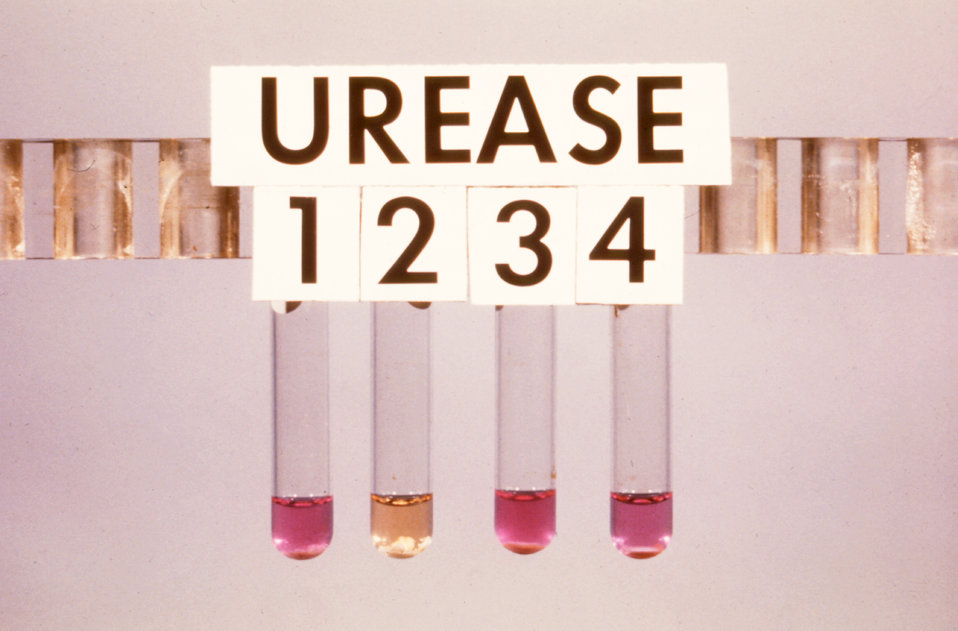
This was a urease test for taxonomic identification of Mycobacteria spp..